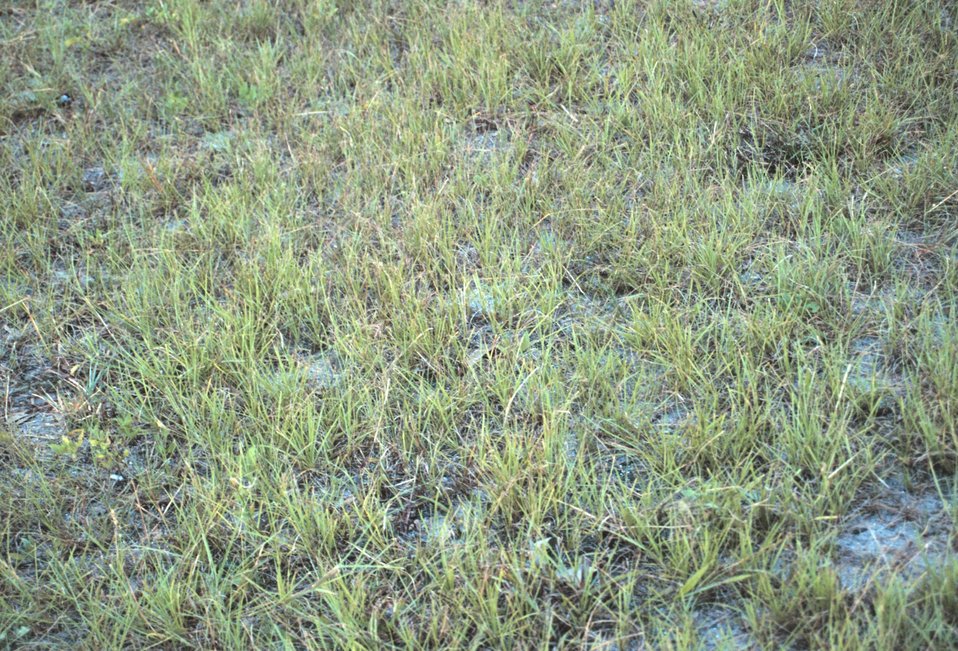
Marsh land near Route 80